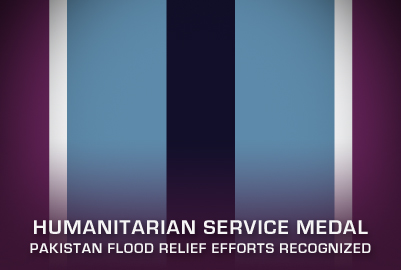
Humanitarian Service Medal